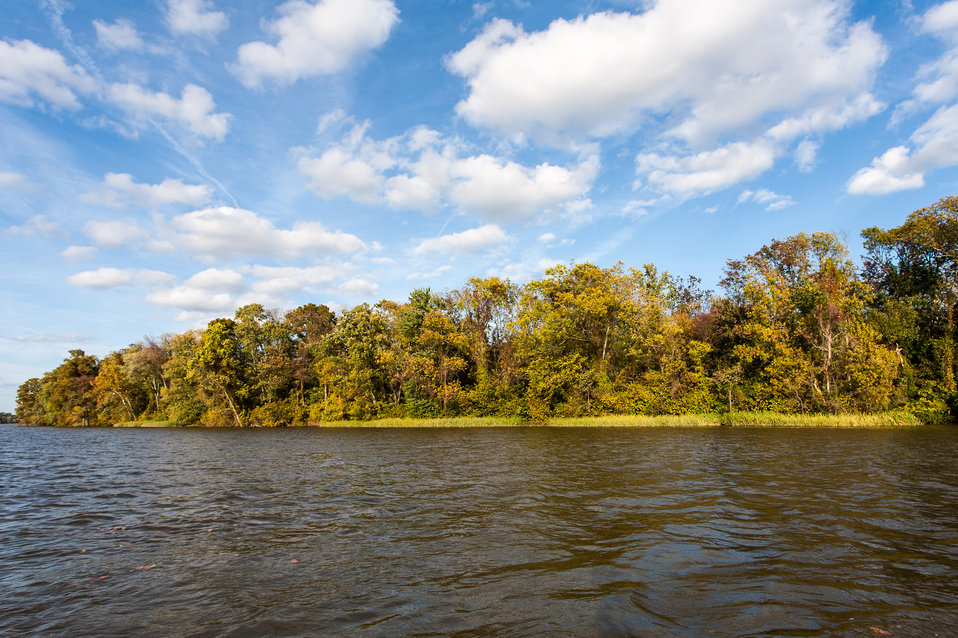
Presquile National Wildlife Refuge